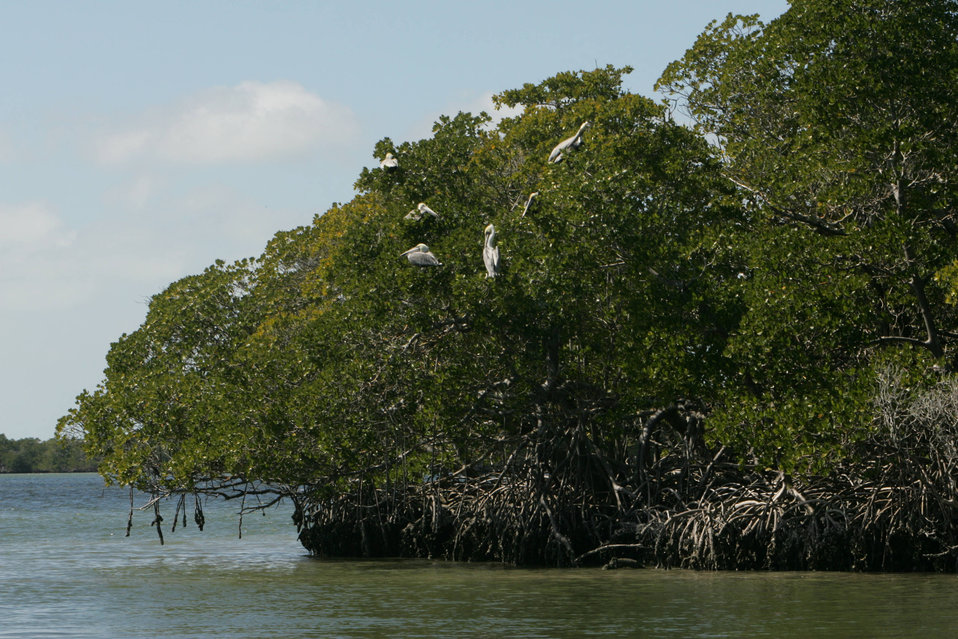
Brown pelicans in mangrove trees

Photo credit: USFWS/Steve Hillebrand

“Blue carbon” is a term used to describe the biological carbon sequestered and stored by marine and coastal organisms with a significant fraction being stored in coastal sediments by coastal seagrasses, tidal marshes, and mangroves. These coastal habitats can sequester and store carbon at high rates equivalent or higher than those of tropical forests